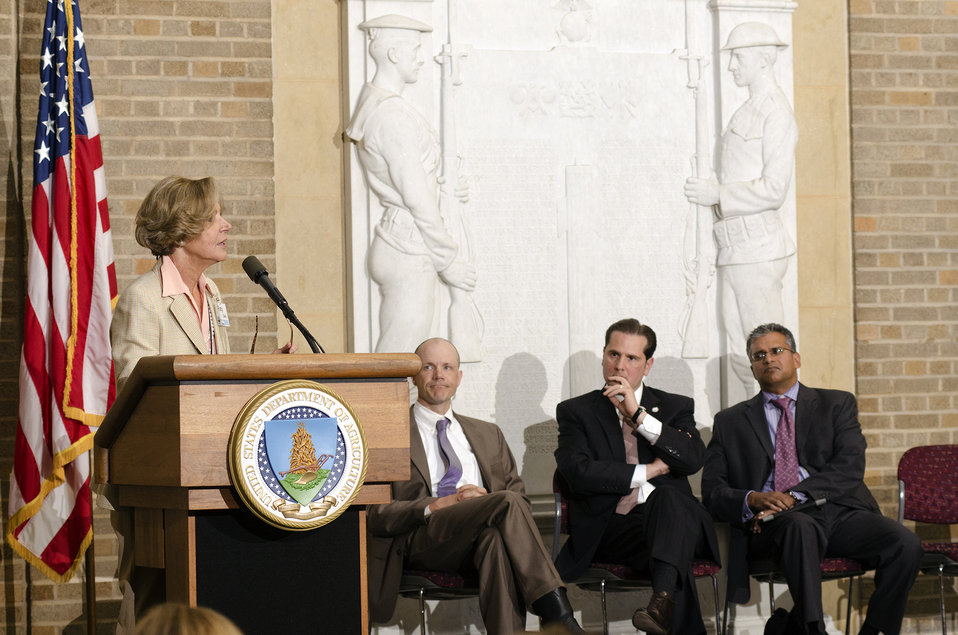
U.S. Department of Agriculture (USDA) Rural Development (RD) Kansas State Director Patty Clark speaks at the closing session of the White House Rural Forum on Regional Innovation on the patio in the Whitten Building at USDA on Thursday, Sep. 19, 2013. (seated L to R Delta Regional Authority Federal Co-Chairman Christopher Masingill, U.S. Department of Housing and Urban Development (HUD) Office of Sustainable Housing and Communities Acting Director Salin Geevarghese, and USDA Under Secretary Rural Development (RD) Doug O’Brien ).